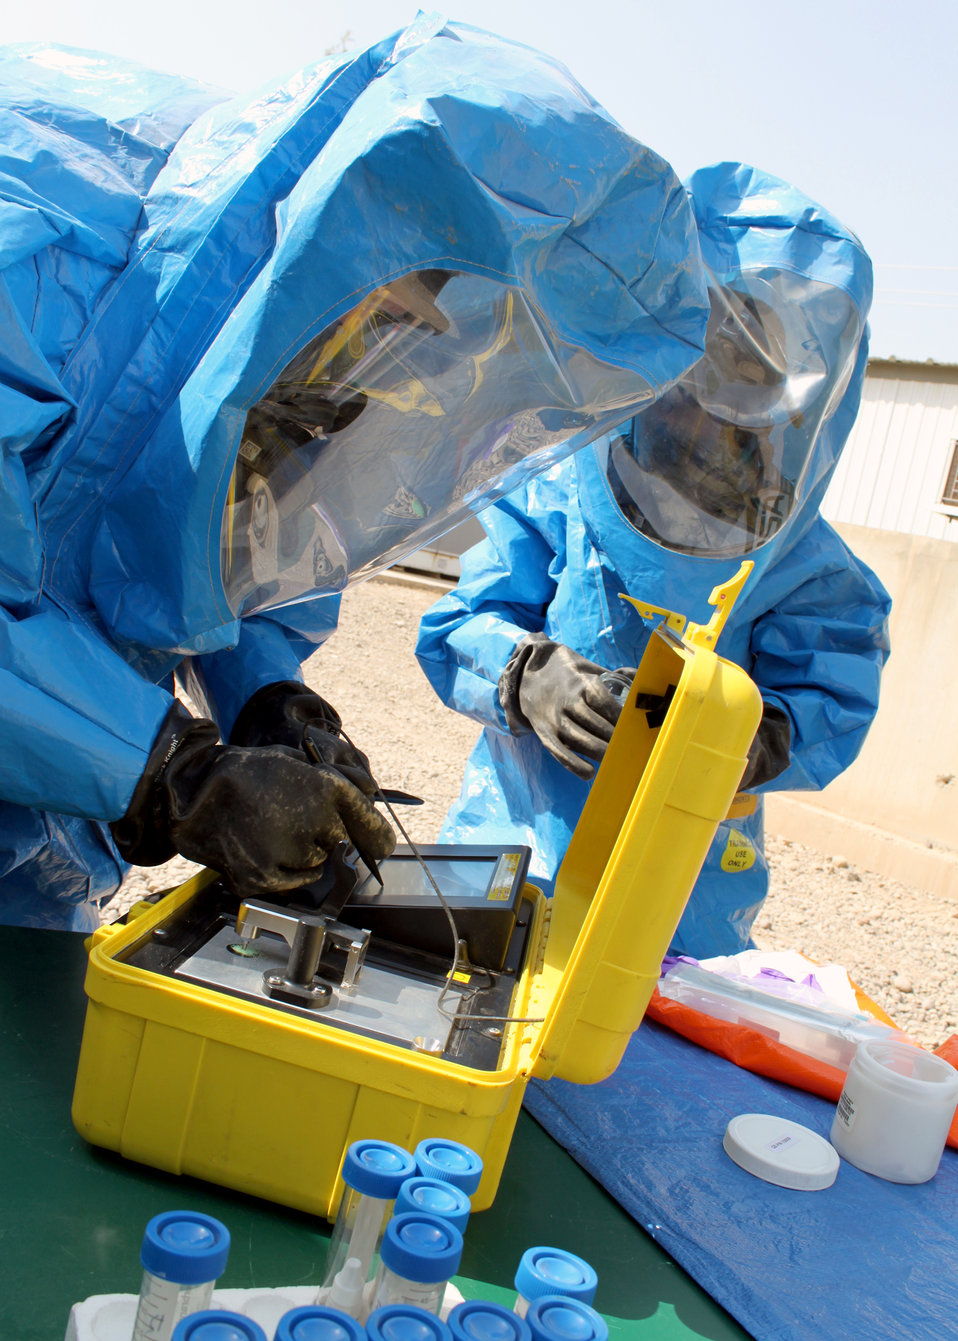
Emergency management

Senior Airmen Nathan Krajcirik (left) and Nadege James test a powder using a piece of equipment called